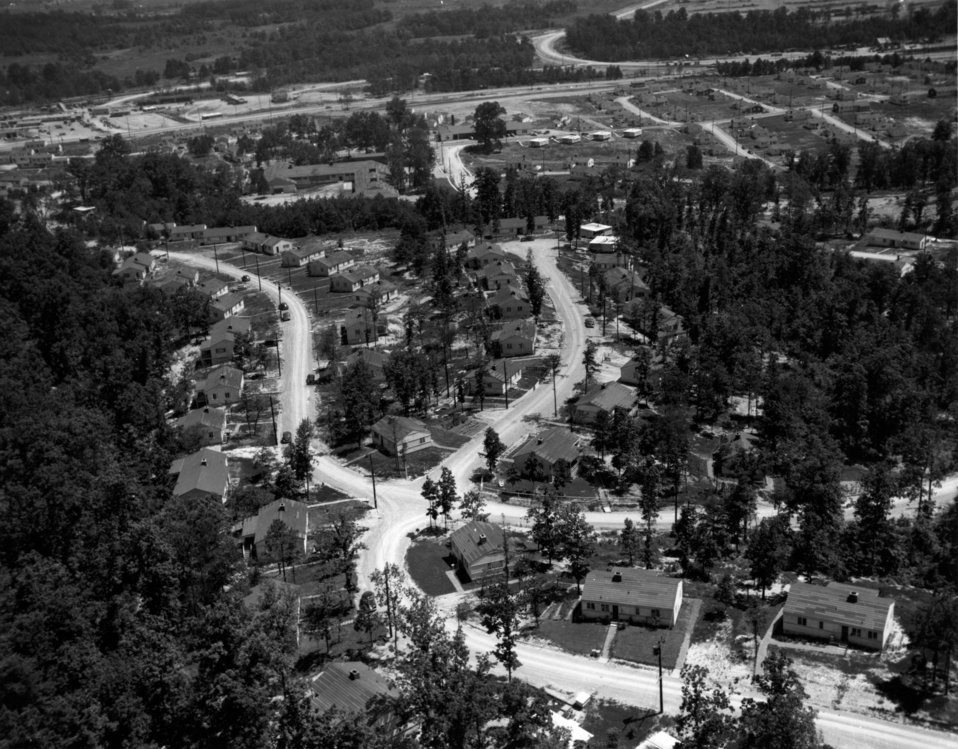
Aerial of Oak Ridge